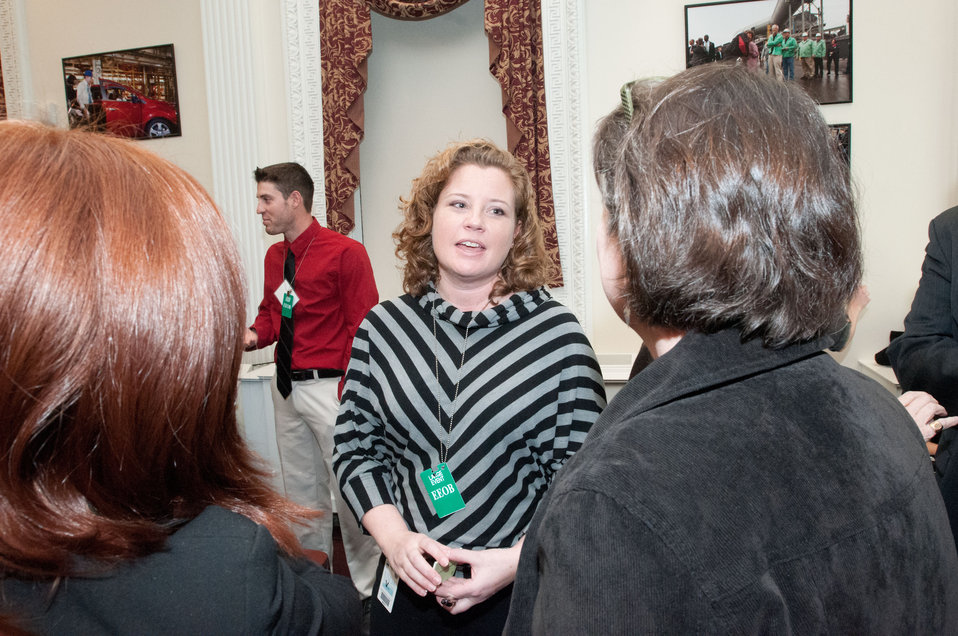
Agriculture Deputy Secretary Kathleen Merrigan (right) talks with EcoTrust/FoodHub's Amanda Oborne (center), after she spoke about food infrastructure, while at the White House, in Washington, D.C., on Monday, March 5, 2012. Food-Hub is emerging as incredible online platform to connect producers and buyers across the Northwest. Through Food-hub, producers can find ways to access new markets, and buyers can find local producers that meet their needs. Food-Hub is also using innovative web platforms and data to facilitate these relationships. Food-Hub received funds from a Rural Business Opportunity Grants (RBOG) program. The program promotes sustainable economic development in rural communities with exceptional needs through provision of training and technical assistance for business development, entrepreneurs, and economic development officials and to assist with economic development planning. The Know your Farmer COMPASS twitter event that was a virtual conversation, which continues the National Conversation on Local and Regional Food projects and how they offer economic opportunities to local farmers, ranchers and food entrepreneurs.